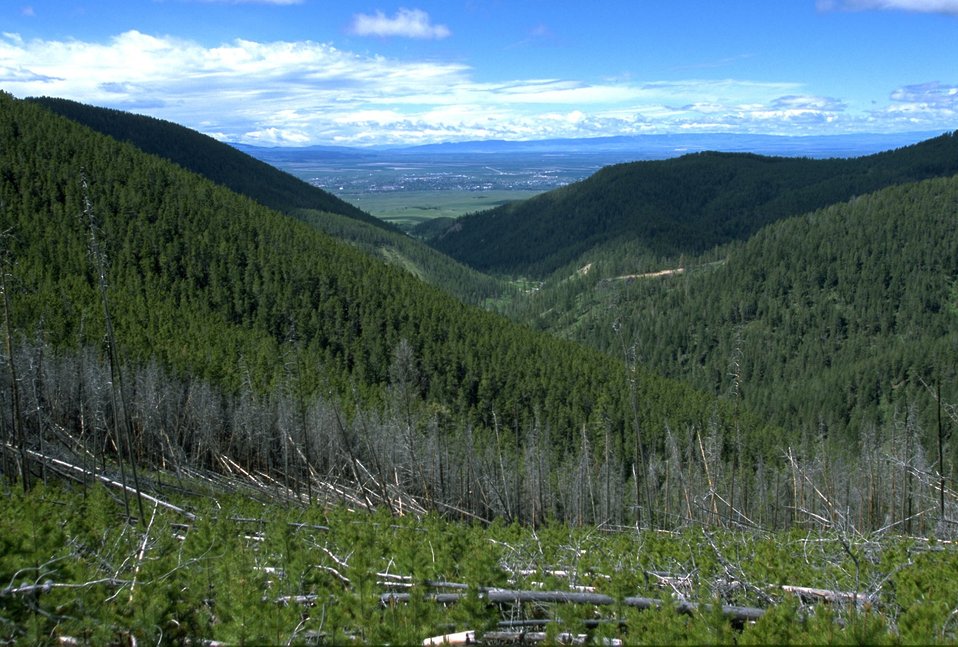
Forested area in the Judith Mountains